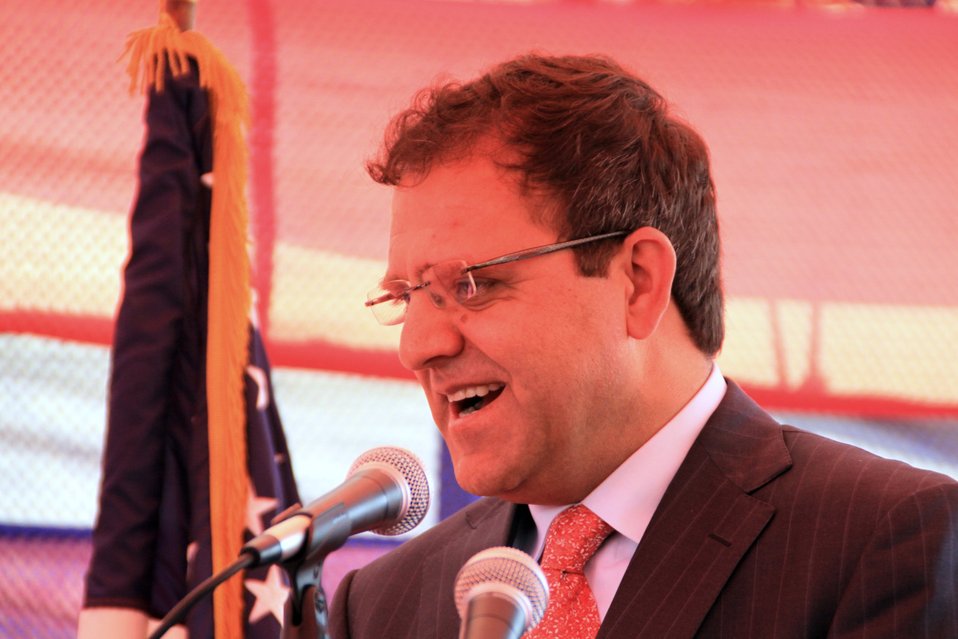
Badam Bagh Farm